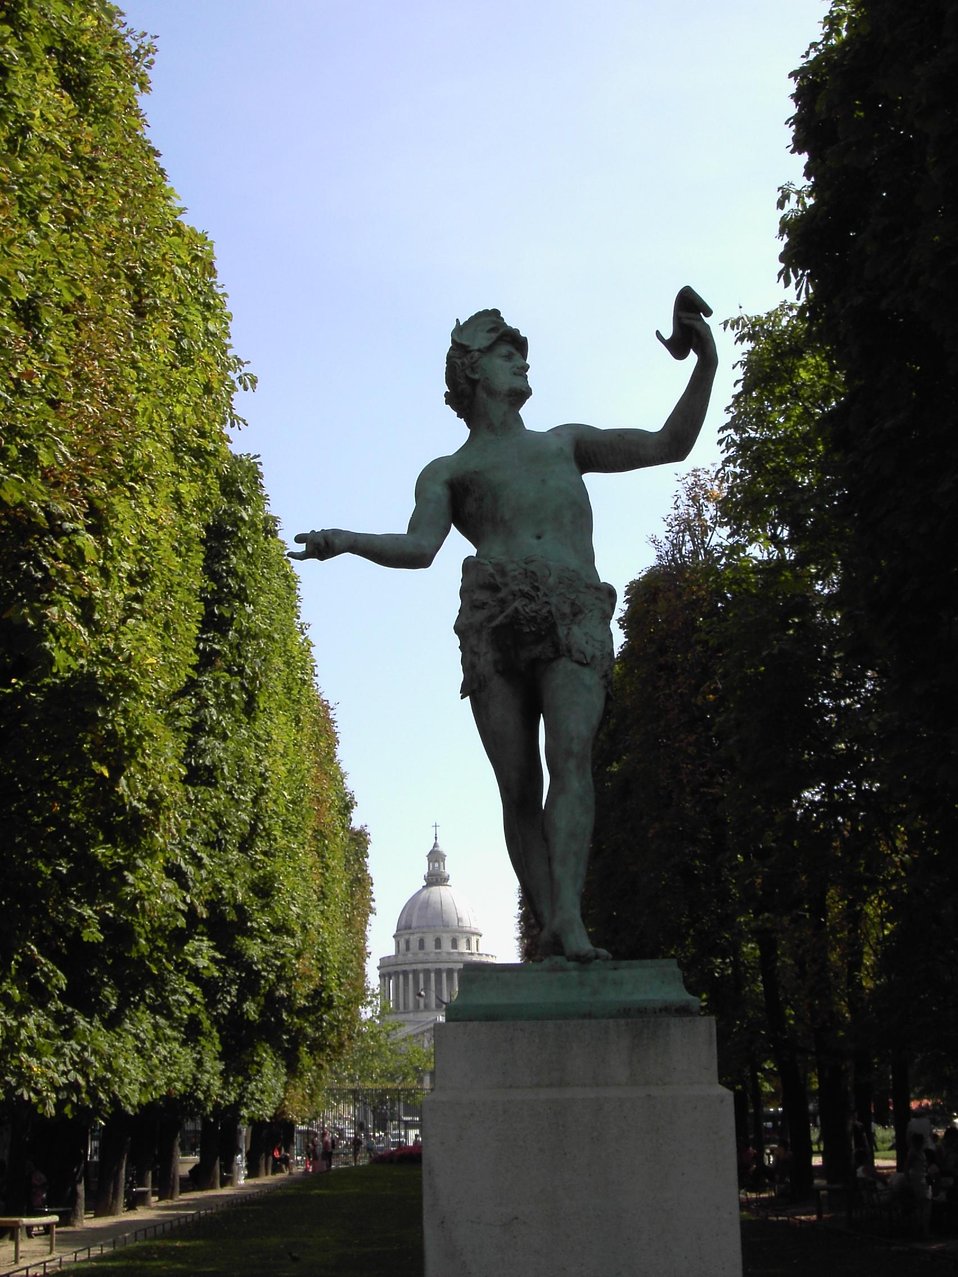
Français : Charles-Arthur Bourgeois (Français, 1838-1886) [1]: Acteur grec (1868), bronze, Paris, Jardin du Luxembourg, et vue sur le Panthéon.